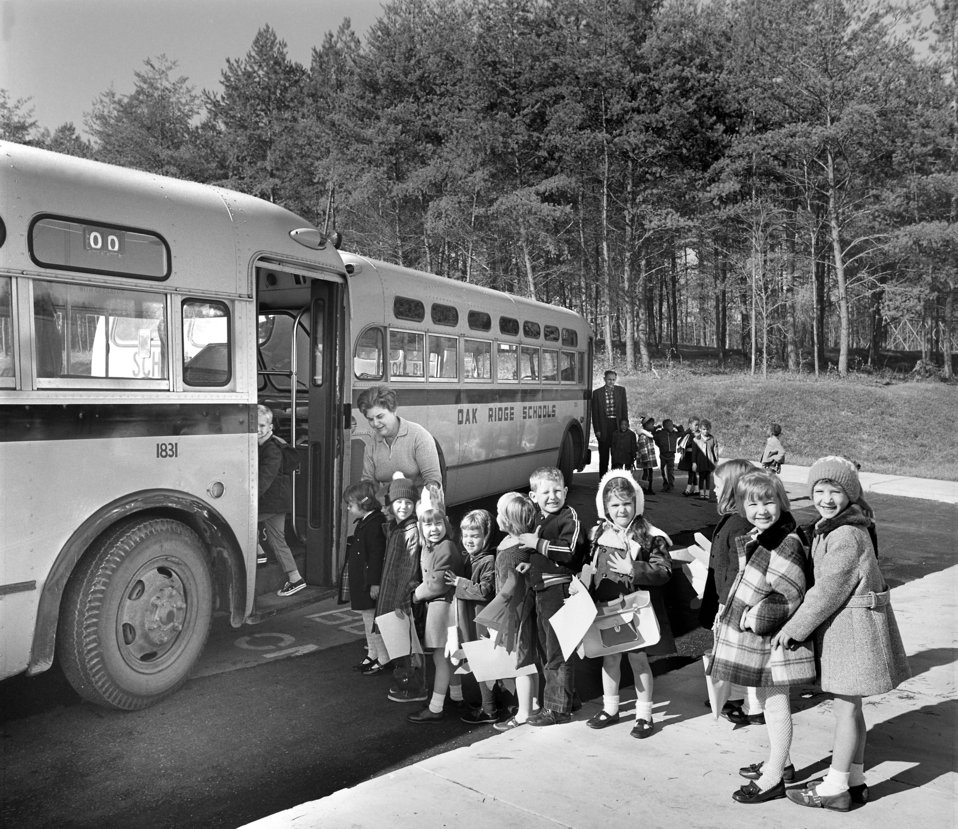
Childern getting on School Bus Oak Ridge 1968

68-589a DOE photo Frank Hoffman 11-1968 Oak Ridge Tennessee